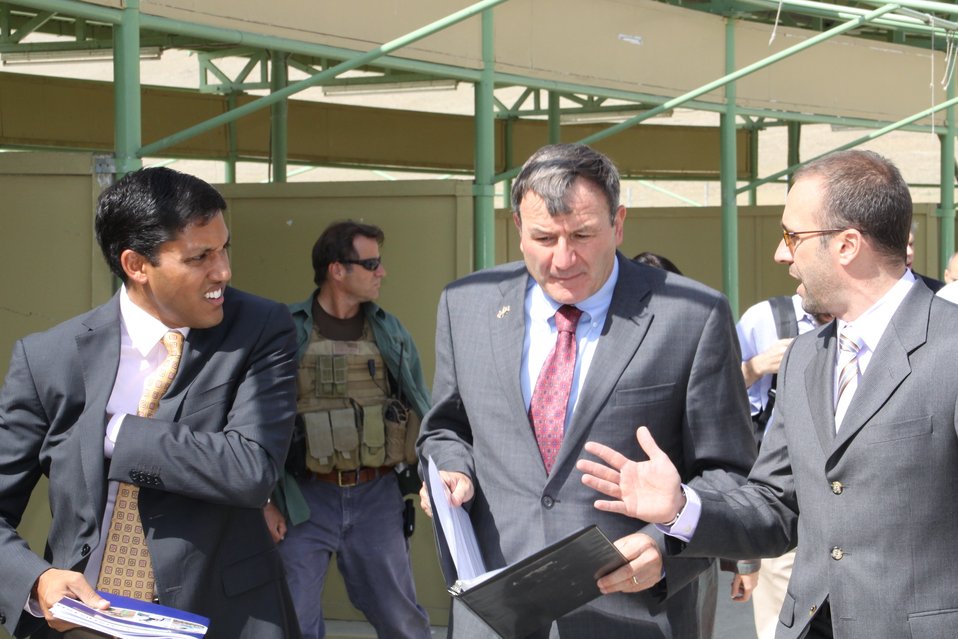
Badam Bagh Farm